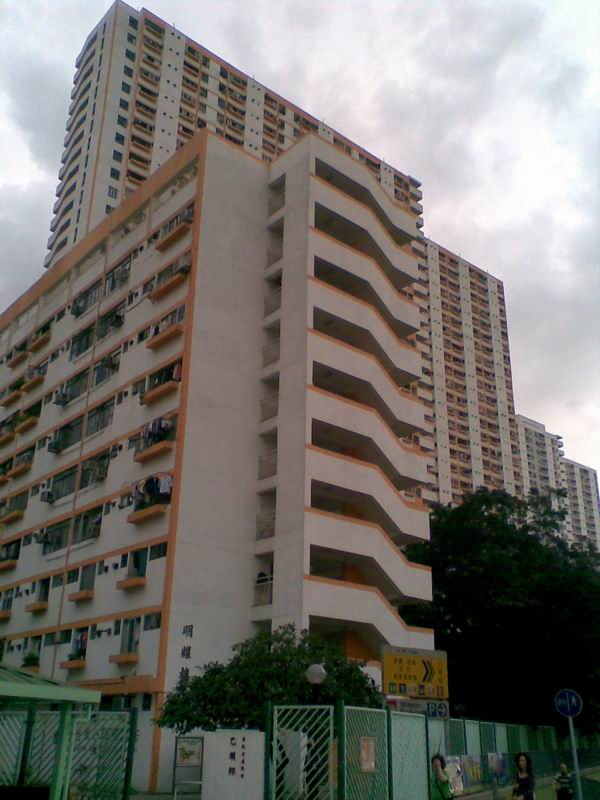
乙明邨明耀樓